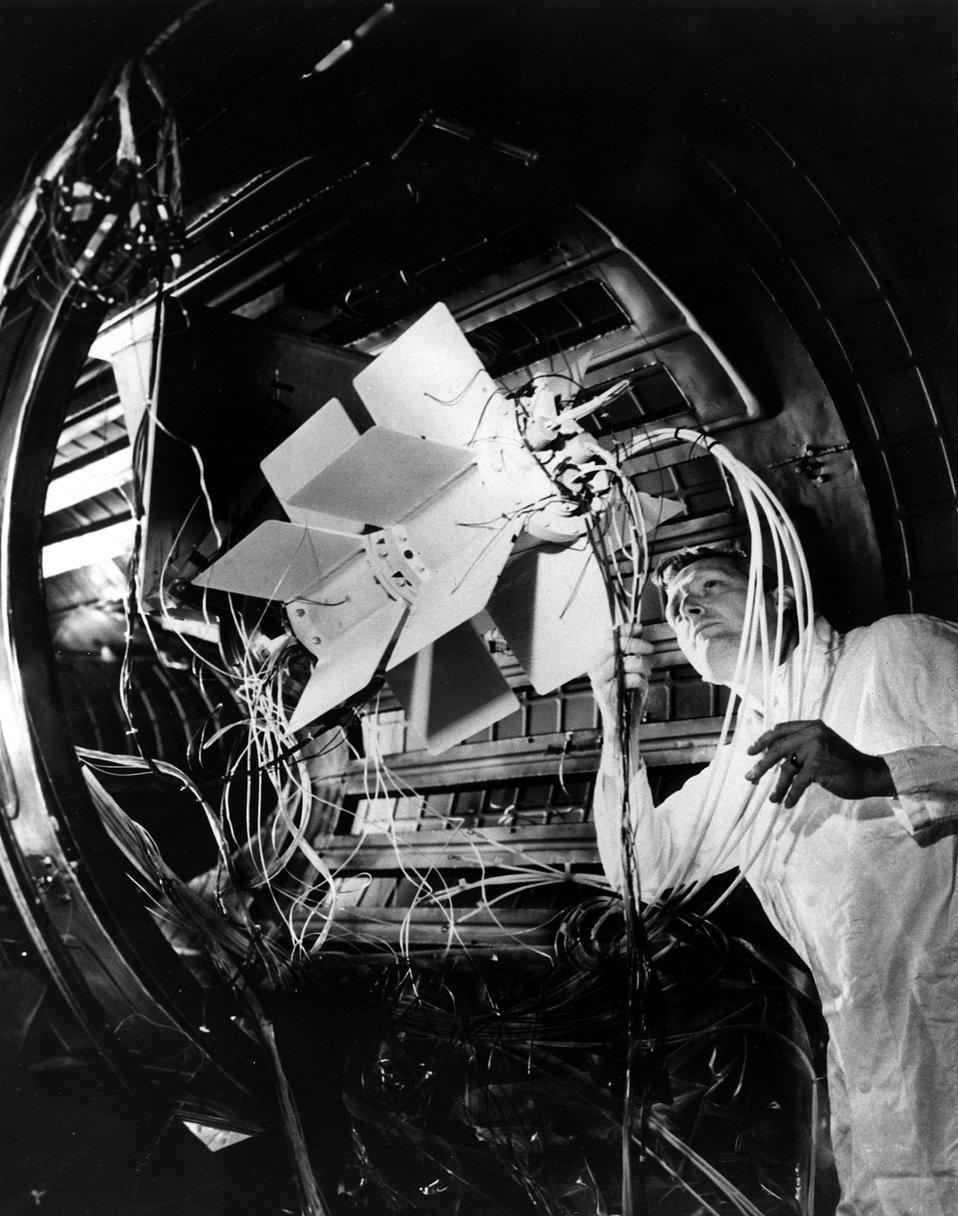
Martin Company technician adjusts wiring on two SNAP-19 nuclear generators ready to undergo a 12-day test in a thermal vacuum chamber designed to simulate the environment of outer space.